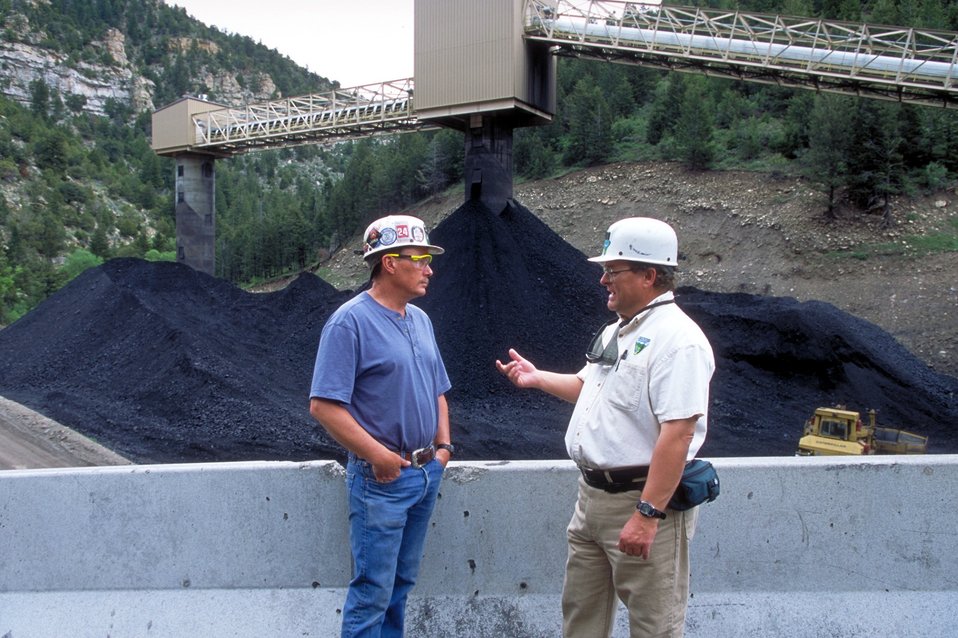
Coal production near Price, Utah.